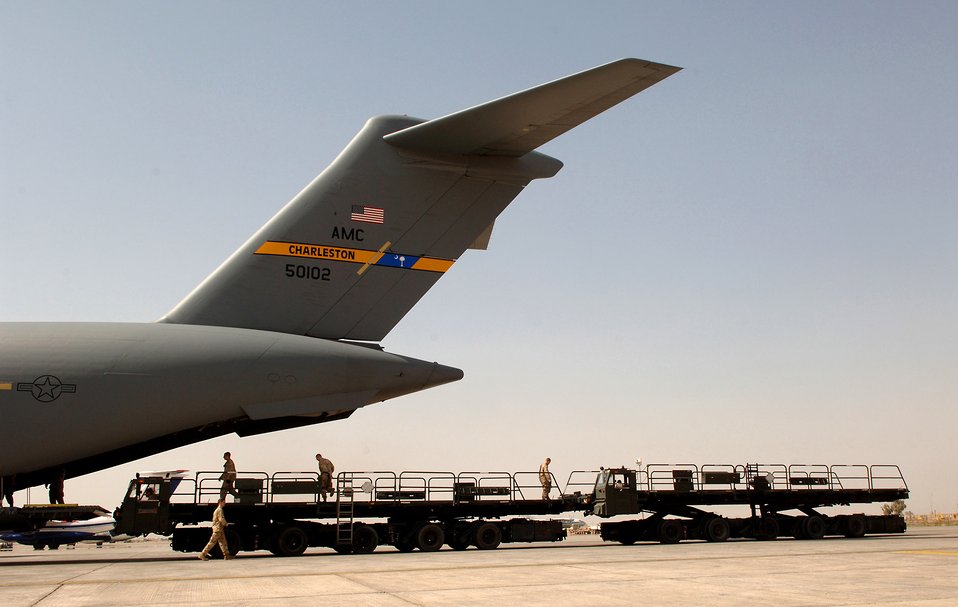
Balad's busy aerial port supports, supplies the fight

Airmen with the 332nd Expeditionary Logistics Readiness Squadron Aerial Port Flight prepare to in process cargo from a C-17 Globemaster III March 14 at Balad Air Base in Iraq. Balad AB is the aerial port hub for all of Iraq and is the busiest cargo aerial port in the Department of Defense.